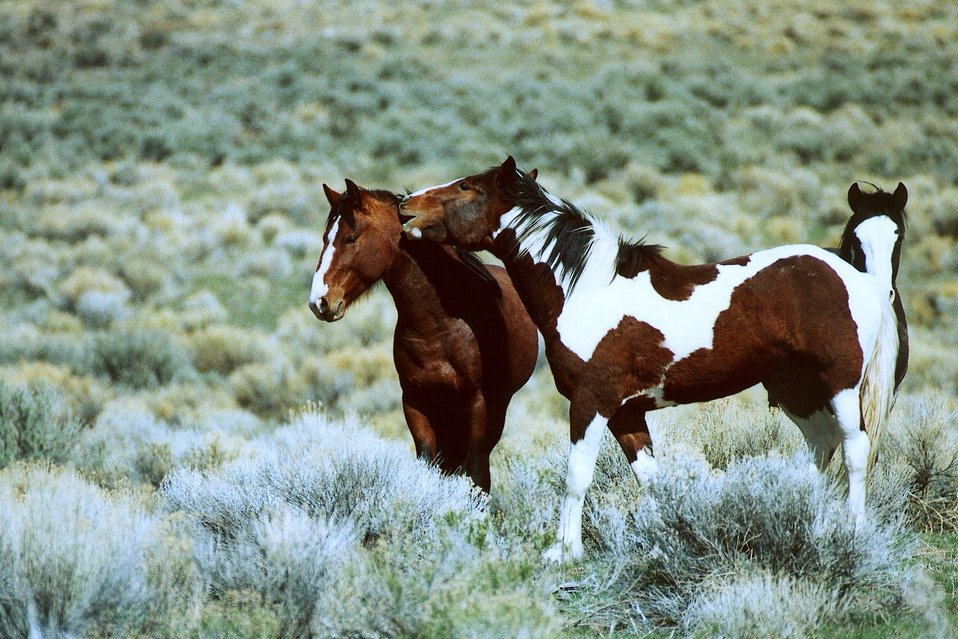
Medium shot of three bachelor stallions on South Steens prairie.